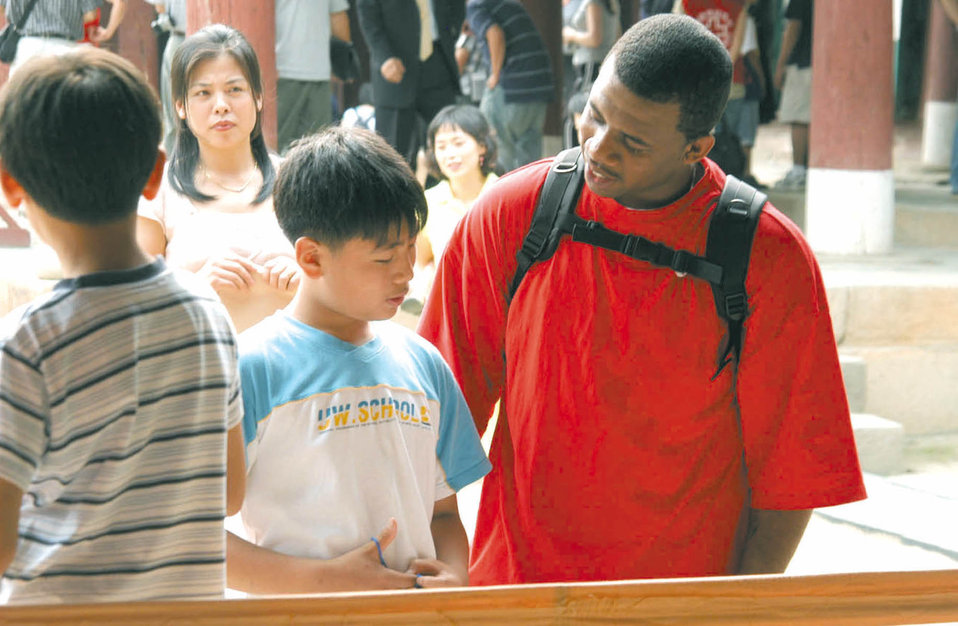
Airmen share culture with South Koreans

JEONJU CITY, South Korea -- Senior Airman Thomas Bookhart talks with Kim Kynugsun during a visit as part of the Korean Red Cross Cultural Awareness Program. Airmen learned about Korean customs and traditions and shared their American customs with South Korean families. Airman Bookhart is assigned to the 8th Logistics Readiness Squadron at nearby Kunsan Air Base.